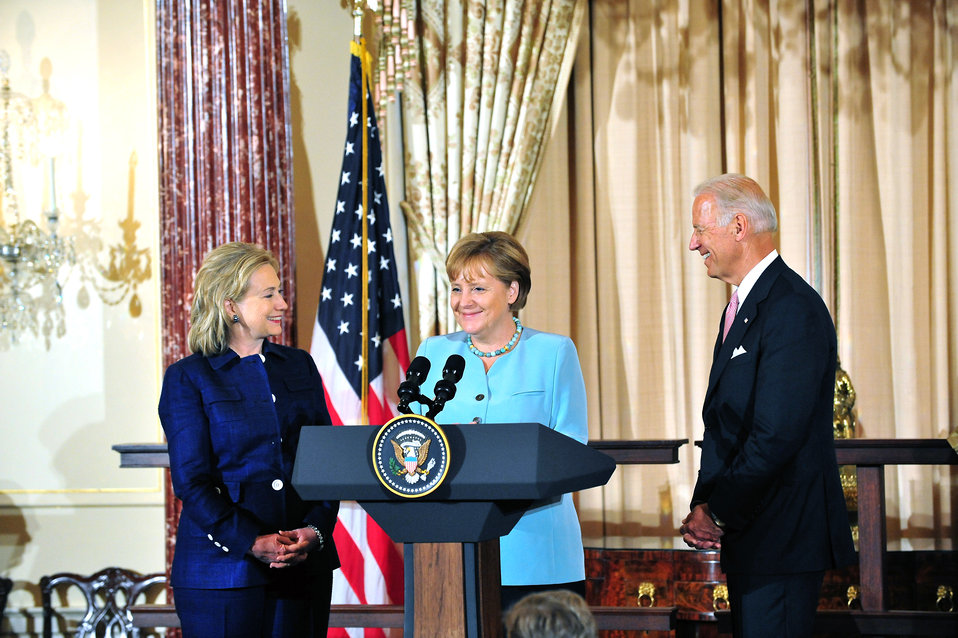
German Chancellor Merkel Delivers Remarks

German Chancellor Angela Merkel delivers remarks at a State Luncheon hosted in her honor by U.S. Vice President Joseph Biden and Dr. Jill Biden, and U.S. Secretary of State Hillary Rodham Clinton, at the U.S. Department of State in Washington, D.C., on June 7, 2011.